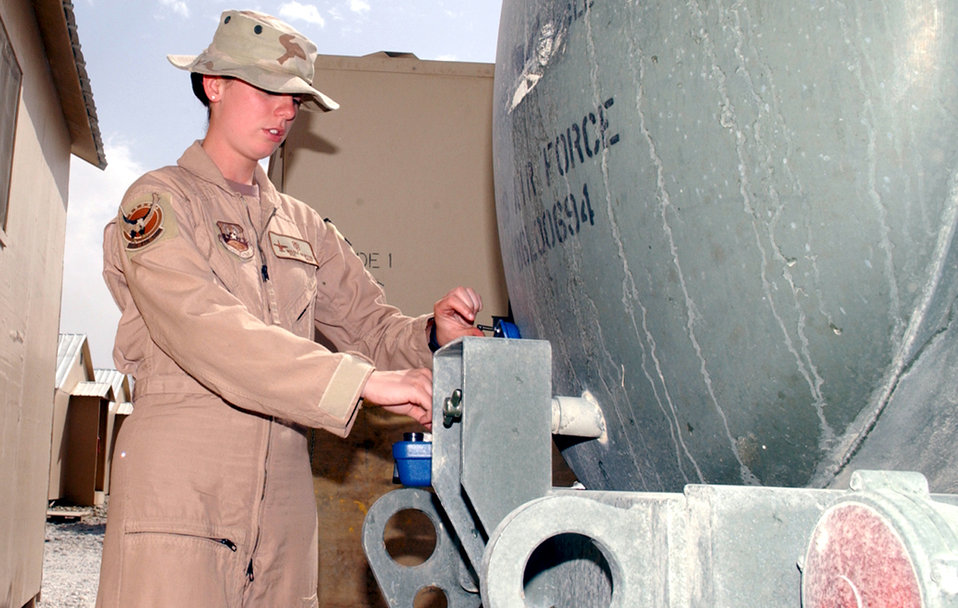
Testing the buffalo

BAGRAM AIR BASE, Afghanistan -- Airman 1st Class Nicole Newton tests the concentration of chlorine in a water buffalo filled with drinking water. The medical Airmen here monitor the chlorine level daily. Airman Newton is a medical technician assigned to the 355th Expeditionary Fighter Squadron.